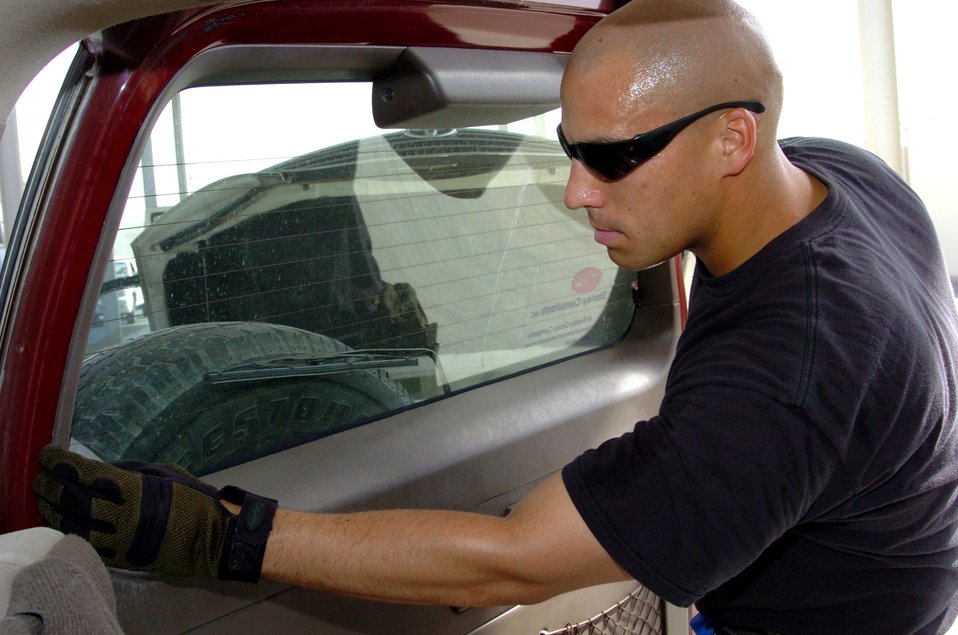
Vehicle searches provide first line of defense

Senior Airman Don San Juan inspects a vehicle at a deployed location in Southwest Asia on Saturday, May 20, 2006. All vehicles must be cleared before being granted access to the base. Airman San Juan is assigned to the 380th Expeditionary Security Forces Squadron.